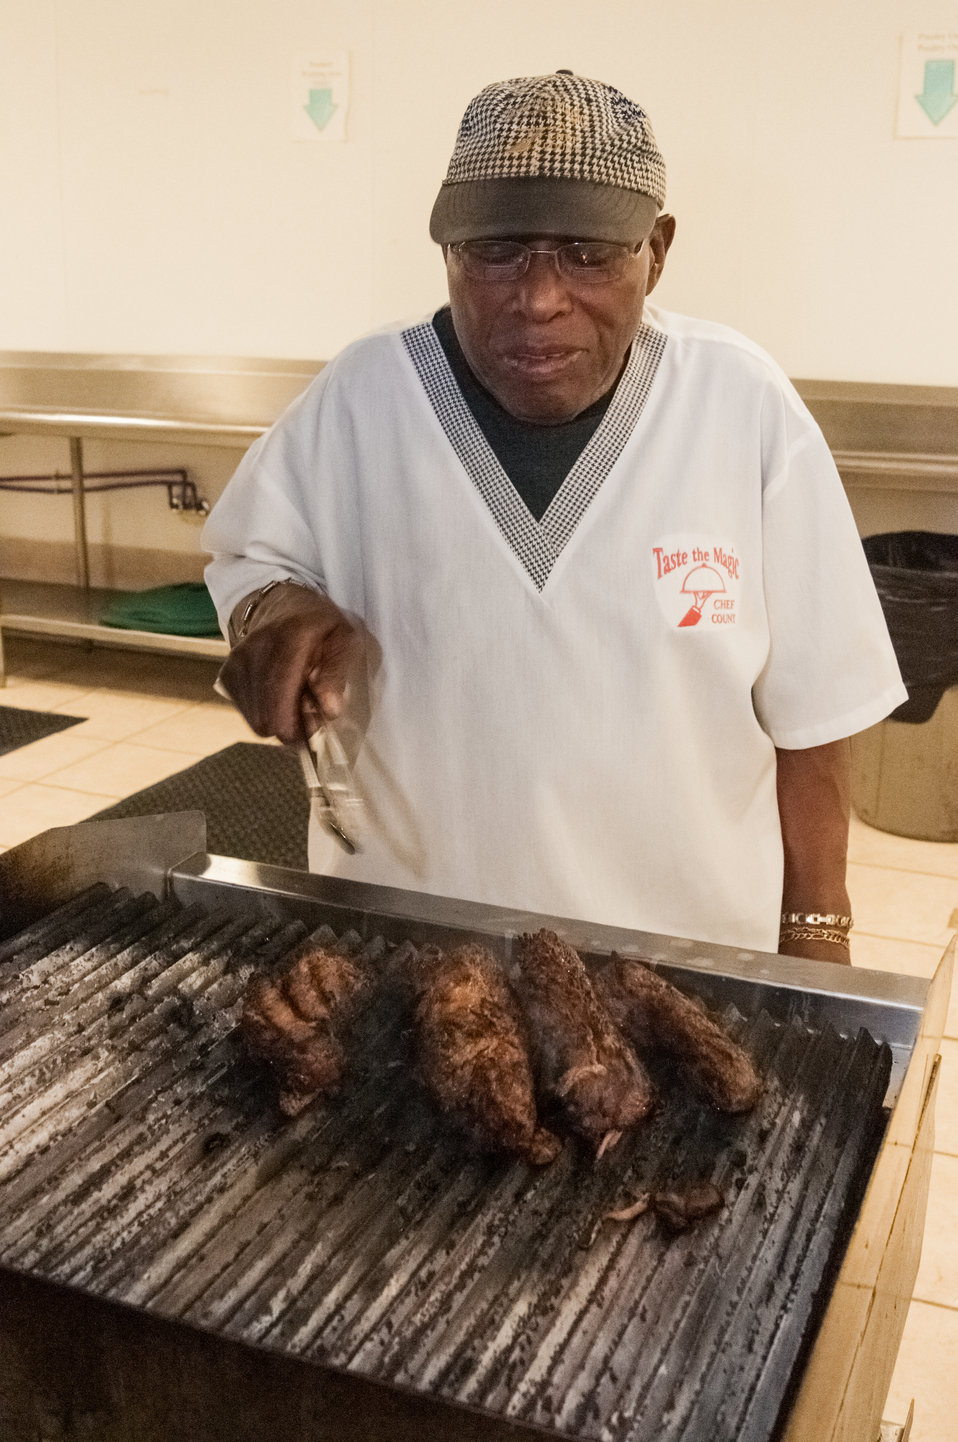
Chef Count Lofton prepares beef brisket in the incubator kitchen at the East Baker Historical Society Community Center in Newton, Baker County, GA on Mar. 7, 2013. The East Baker Historical Society Community Center secured a U.S. Department of Agriculture (USDA) Rural Development (RD) Community Facilities (CF) Loan for the kitchen that enabled residents to prepare catered meals and to prepare and package food products. The USDA Strike Force Initiative has designated Baker County, GA as a Strike Force county selected to receive assistance to relieve persistent poverty in historically high-poverty counties.